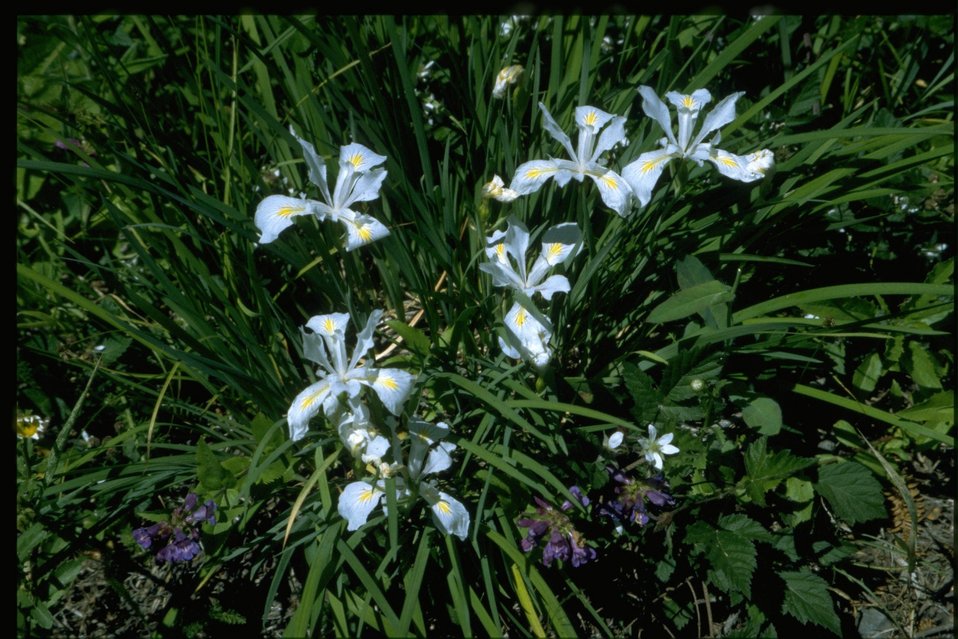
Medium shot of Iris tenax.